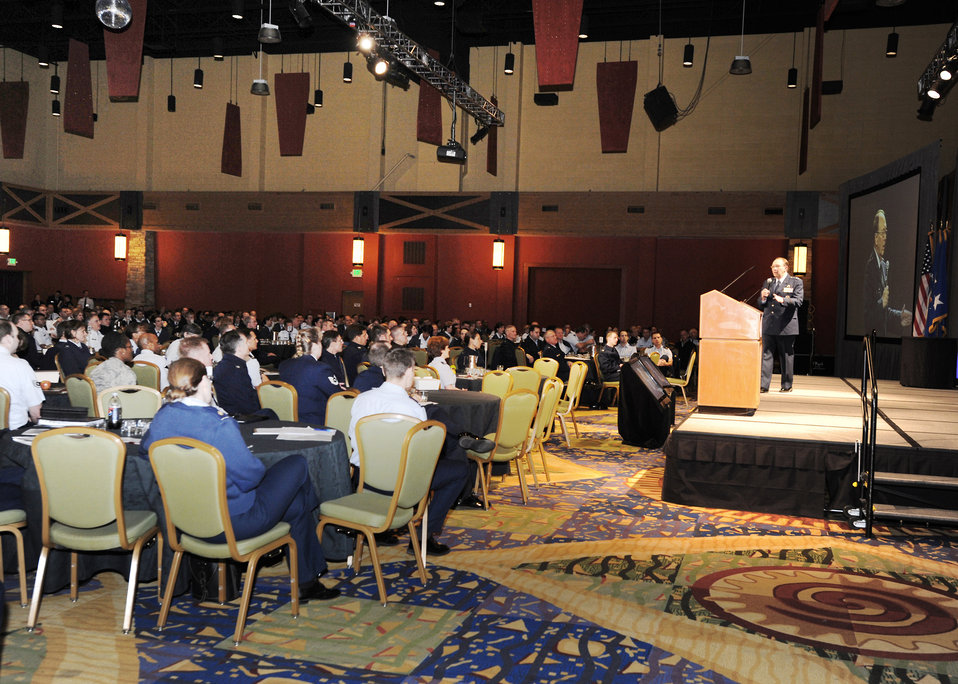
Guard, Reserve legal communities gather for intense training

Lt. Gen. Charles E. Stenner, Jr. addresses judge advocates and paralegals from the Air Reserve Component during the two-day Survey of Law Conference Jan. 21 to 22, 2011, in Denver. General Stenner is the commander of the Air Force Reserve Command.